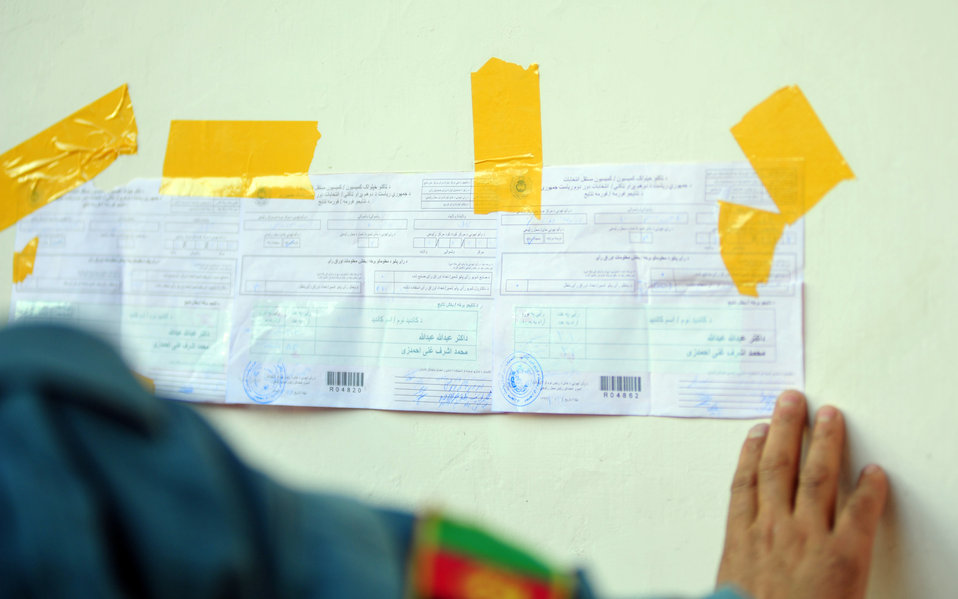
A policeman hangs result list of a polling center in Kabul.